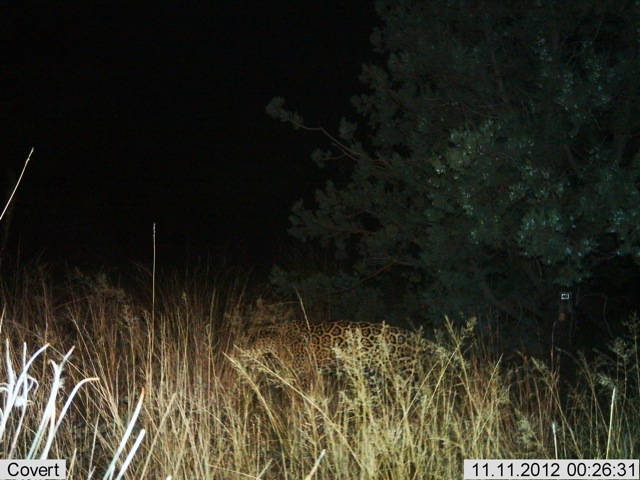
Male jaguar photographed by automatic wildlife cameras in the Santa Rita Mountains on Nov 11, 2012 as part of a U.S. Fish and Wildlife Service/Department of Homeland Security-funded jaguar survey conducted by University of Arizona.